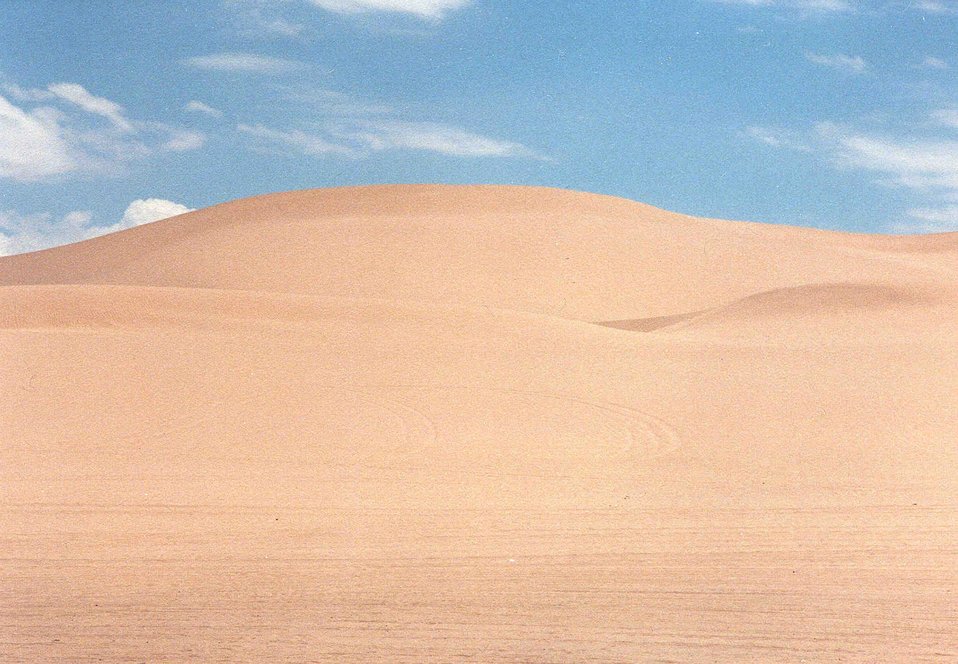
Beautiful sand dunes . . . beauty untouched!